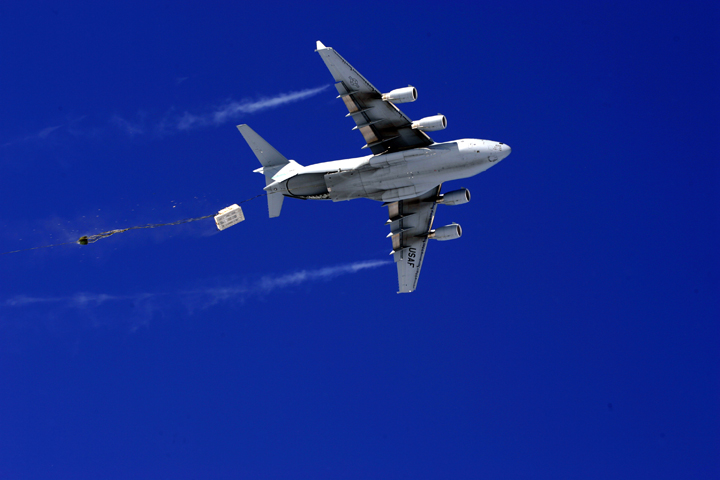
C-17 makes its first South Pole airdrop

A C-17 Globemaster III drops pallets of cargo Dec. 20 during the first C-17 airdrop to the South Pole. Airmen from the 62nd and 446th Airlift Wings at McChord Air Force Base, Wash., delivered 70 tons of supplies to the National Science Foundation team wintering there. The mission was a